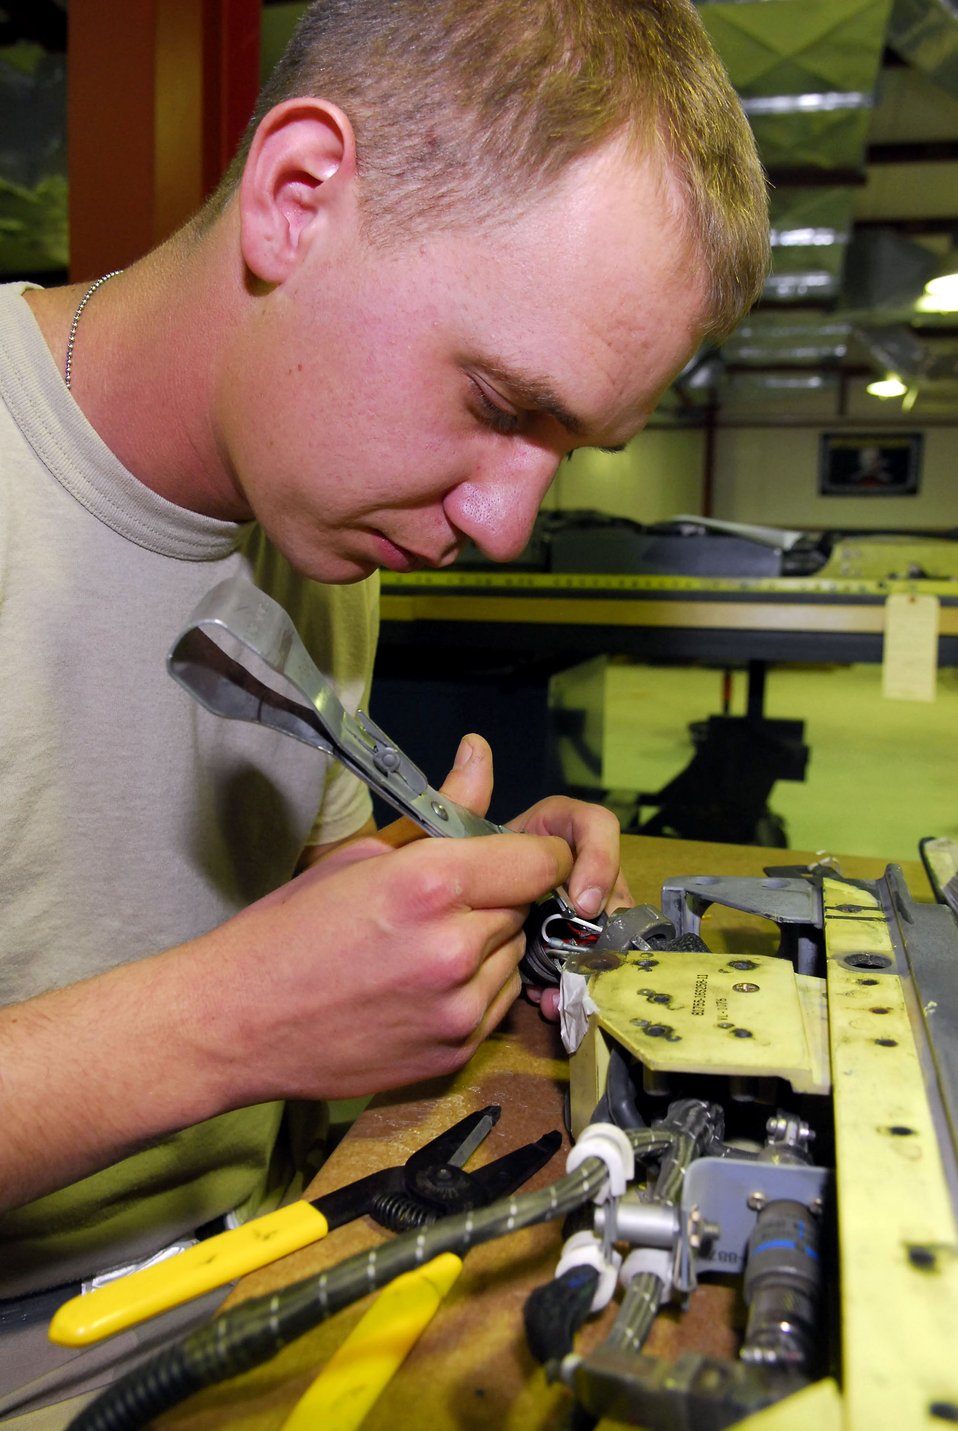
Weapons check

Airman 1st Class Chris Puzan fixes discrepancies found on a S2-10 missile launcher during an inspection Dec. 28 at Balad Air Base, Iraq. Missile launcher inspections ensure that the armament systems are in working order. Airman Puzan, a 332nd Expeditionary Maintenance Squadron armament systems technician, is deployed from Spangdahlem Air Base, Germany.